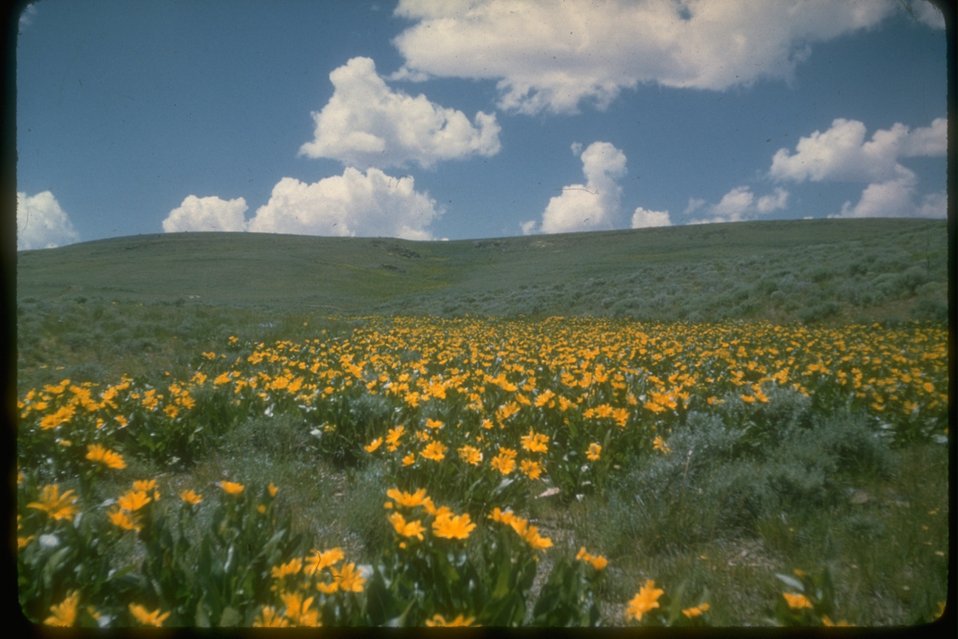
Wildflowers located in the middle of desolate rangeland area.